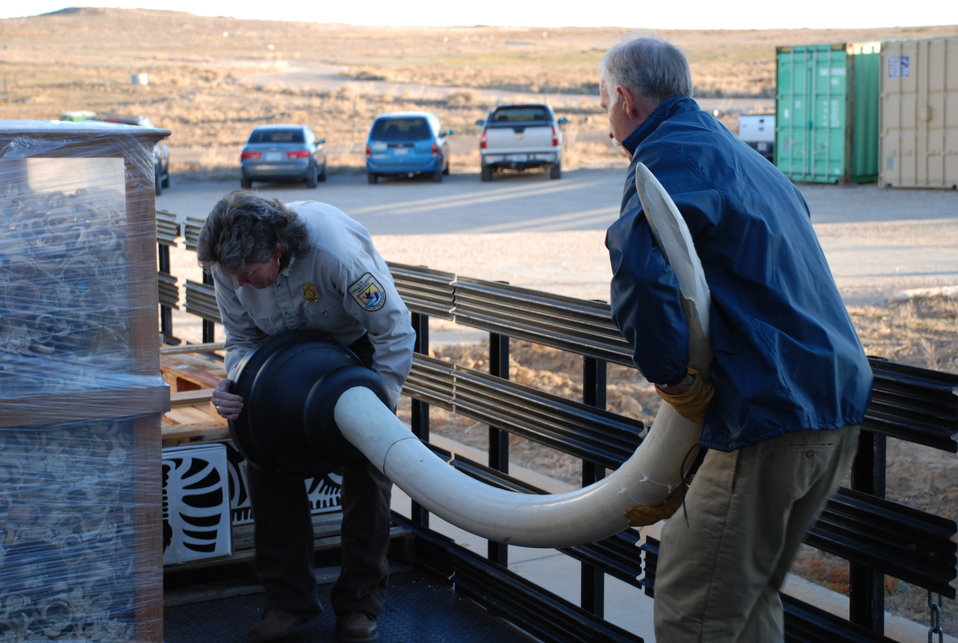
Before sunrise crews began loading ivory which FWS seized during undercover investigations of organized smuggling operations or confiscating at the U.S. border over the past 25 years.